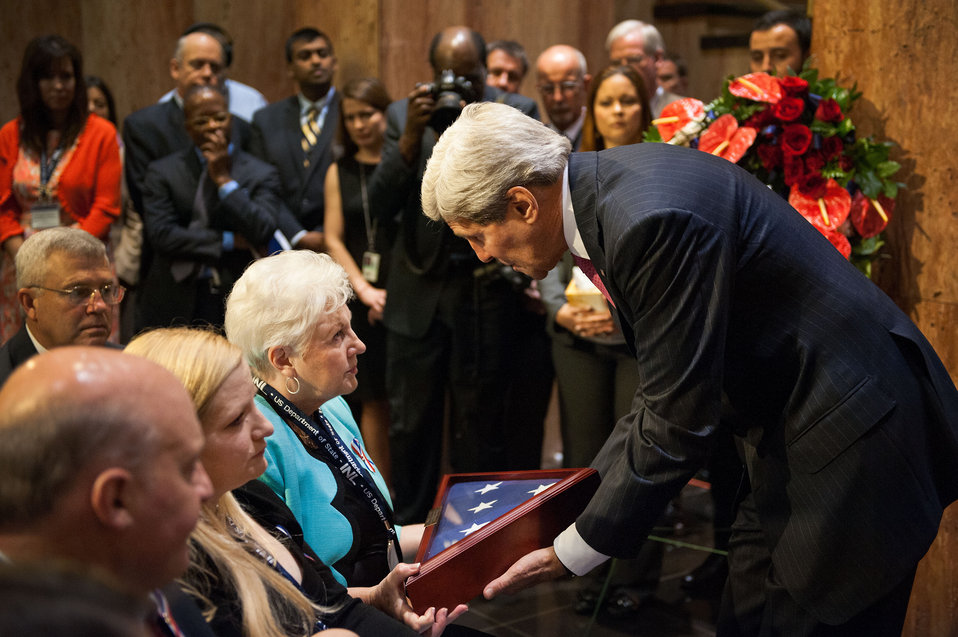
Secretary Kerry Presents Rebecca Bynum a Flag in Honor of Her Son, Kevin Bynum

U.S. Secretary of State John Kerry presents an American flag to the mother of Kevin Bynum, Rebecca, during the dedication of the Bureau of International Narcotics and Law Enforcement Affairs memorial wall ceremony at the U.S. Department of State in Washington, D.C., on June 12, 2014. The memorial honors personnel, including Kevin, who have died while participating in overseas criminal justice and counternarcotics assistance programs on behalf of the United States.